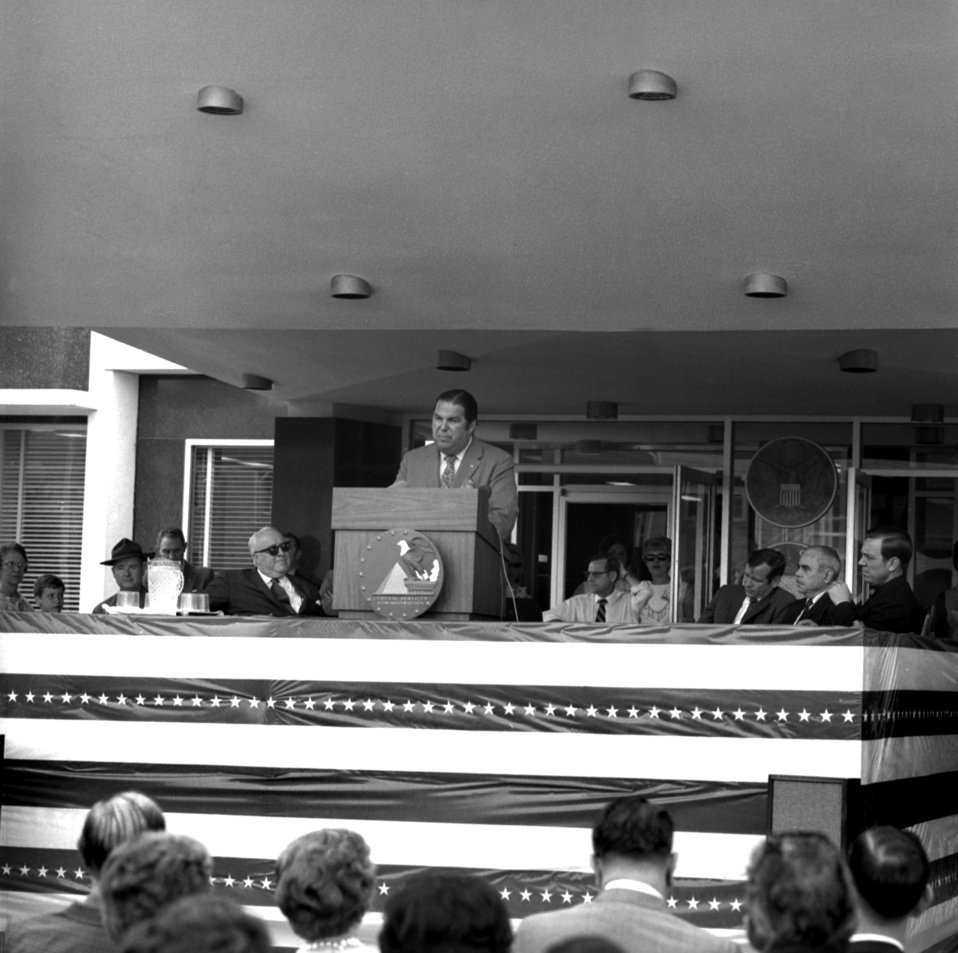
Formal Dedication New AEC (Atomic Energy Commision) - FOB (Federal Office Building) Oak Ridge

70-165r DOE Photo by Frank Hoffman Formal Dedication New AEC (Atomic Energy Commision) - FOB (Federal Office Building) Oak Ridge Tennessee 6-27-1970